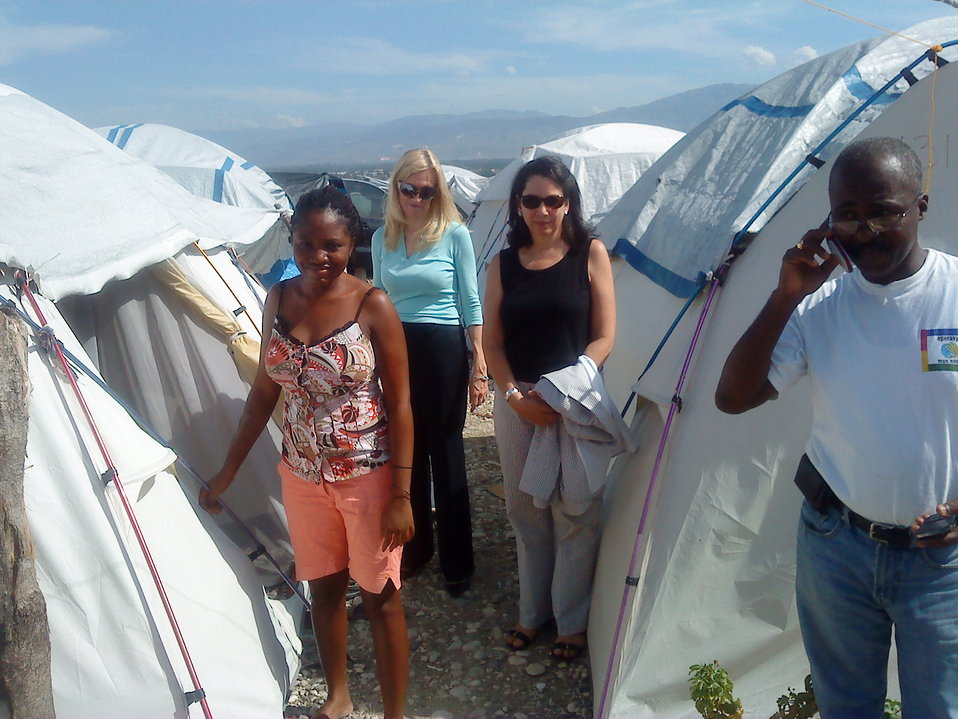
Under Secretary Lael Brainard visits Haiti, 7/29/2010

Upon her arrival, Under Secretary Brainard toured a tent camp powered with solar lanterns provided by the World Bank. While power is progressively being re-established in several parts of the capital, many areas are expected to remain without power for a long period.